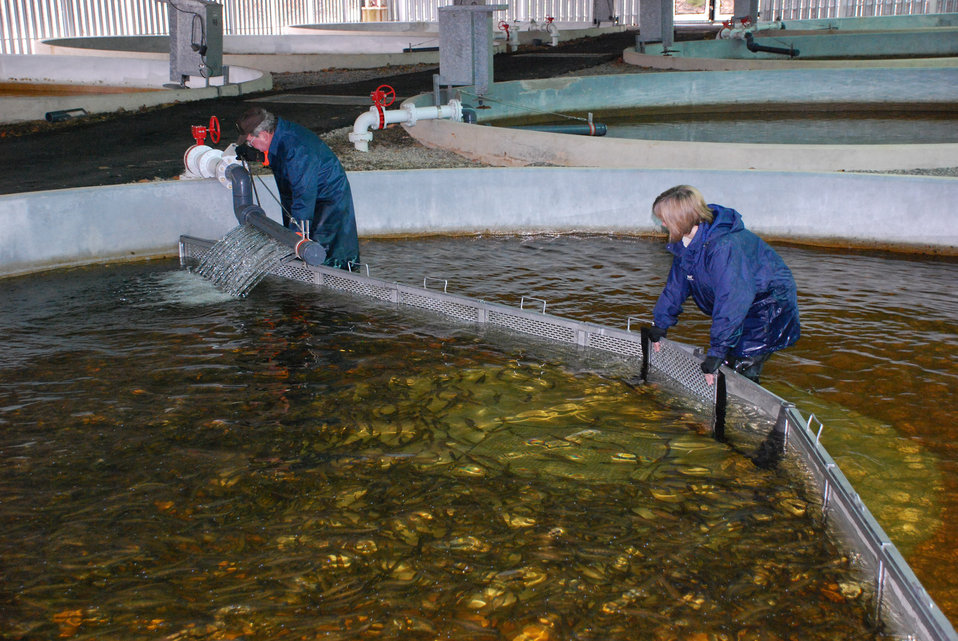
Crowding the Atlantic Salmon

Leon Behler and Denise Buckley guide the Atlantic salmon smolts into a confined space for easy netting and loading into the distribution trucks.